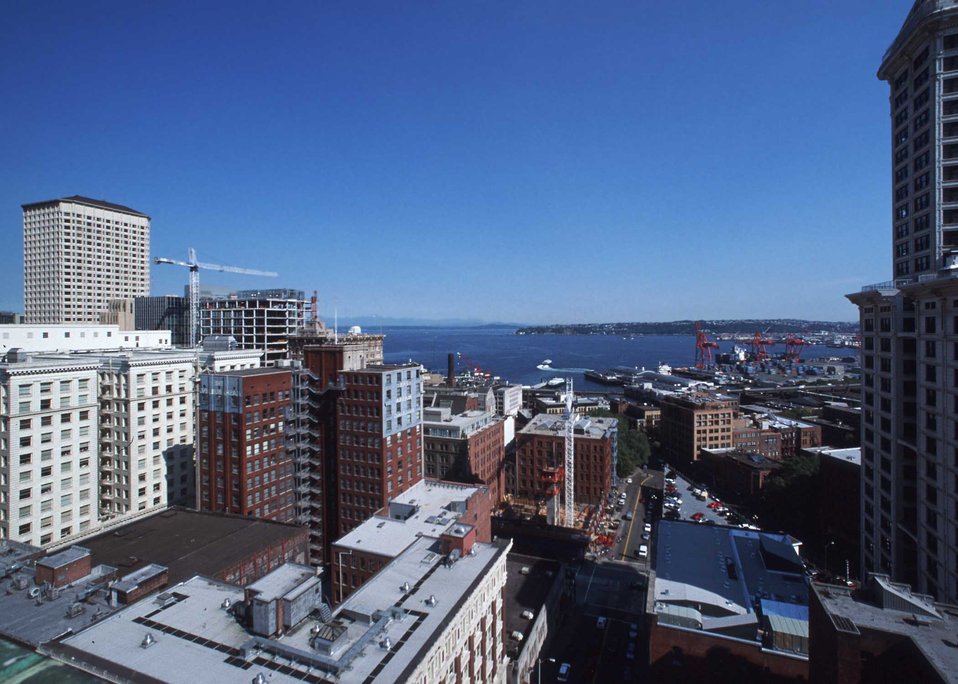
Scenic view of downtown Seattle, Washington with bay and boats in the background.